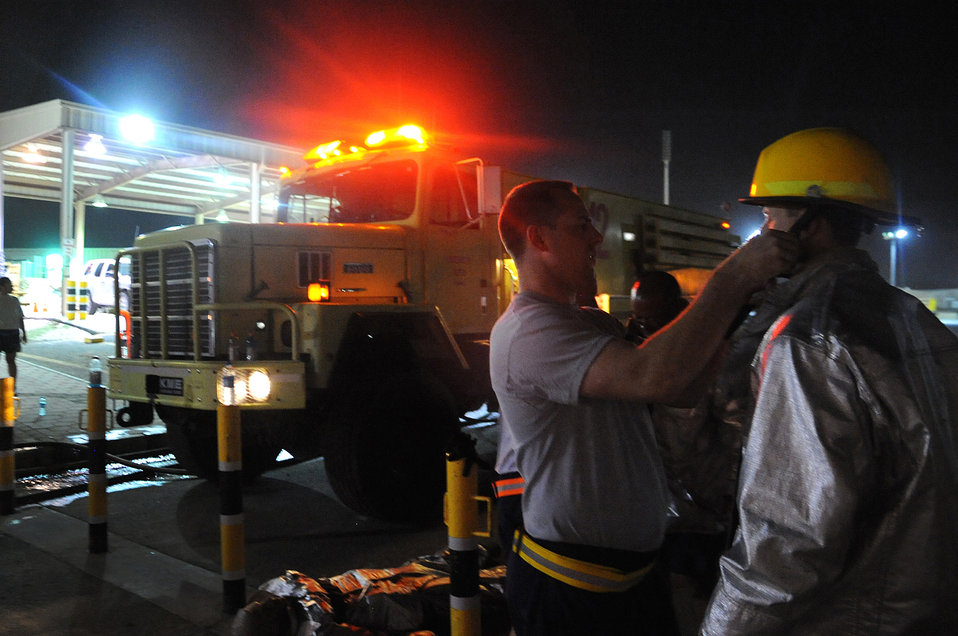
Firefighter challenge

Air Force firefighters adjust their gear May 28, 2011, before a firefighter challenge in Southwest Asia. The challenge featured multiple events, including tool carry, equipment hoist, dummy carry, hose advance, tire strike and hose pack carry.